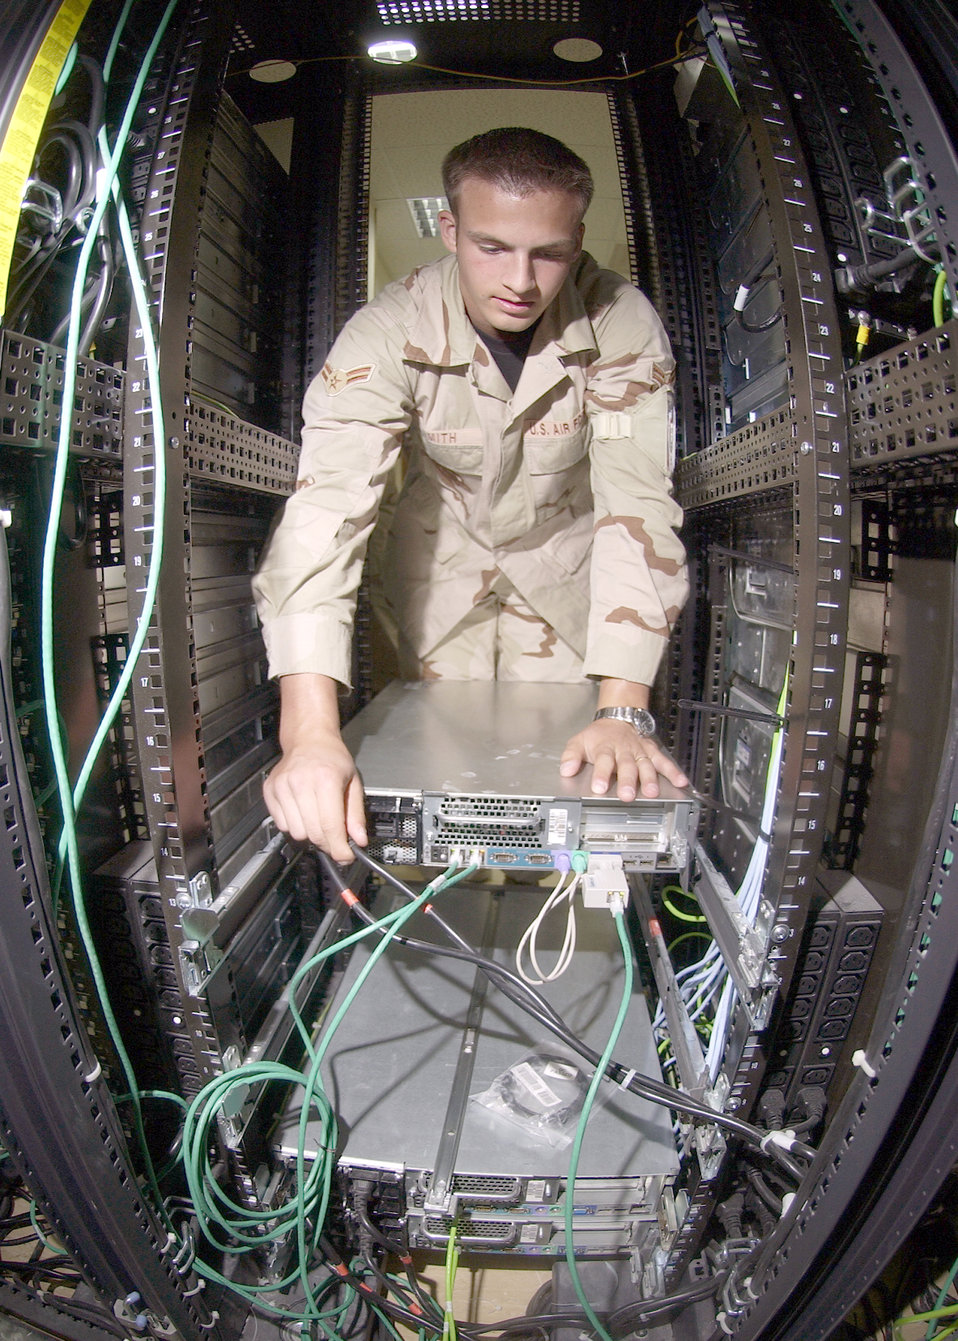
Making connections

SOUTHWEST ASIA -- Airman 1st Class Nathan Smith connects cables to a new server at a deployed location here. Airman Smith is a computer technician assigned to the 379th Expeditionary Communications Squadron's network control center. The center maintains more than 130 servers supplying more than 6,000 people with vital information technology. Airman Smith is deployed from McGuire Air Force Base, N.J.